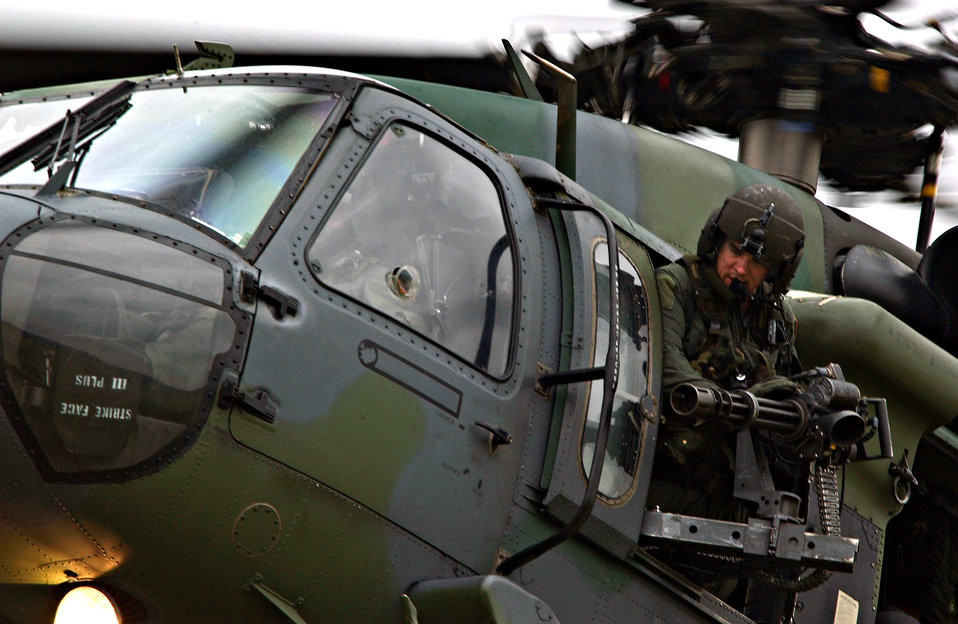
OVER SIERRA LEONE (AFPN) -- Staff Sgt. Dennis Snyder, a flight engineer, scans for obstacles as an HH-60G Pave Hawk prepares to land during a training mission Aug. 10. Snyder is from the 56th Rescue Squadron from Naval Air Station Keflavik, Iceland, and is currently serving with the 398th Air Expeditionary Group. The group is providing personnel recovery and emergency evacuation capability for the Humanitarian Assistance Survey Team and the Fleet Antiterrorism Security Team in Liberia.